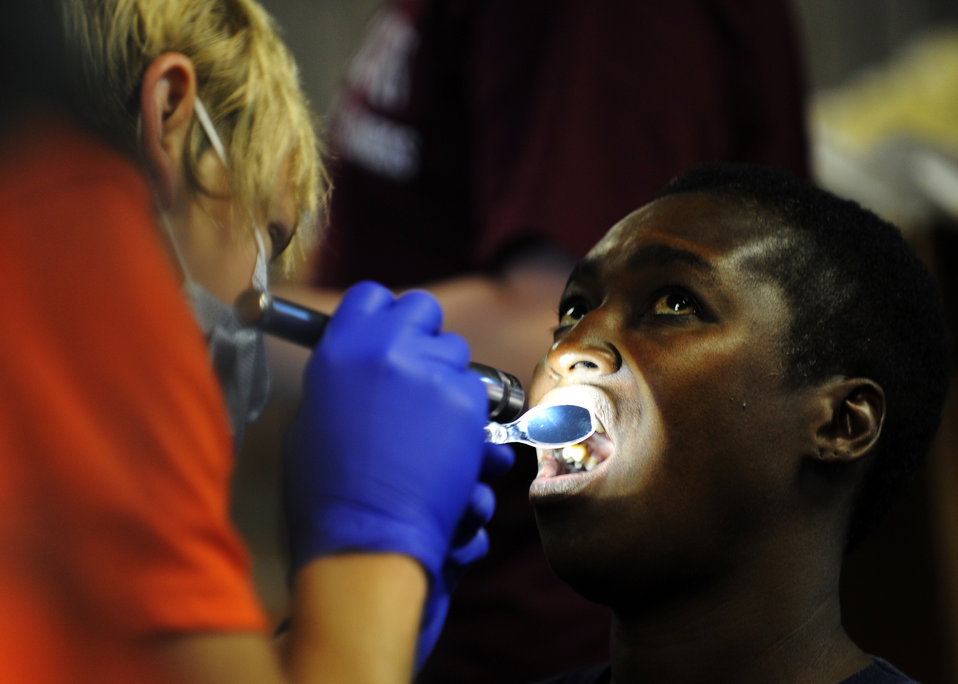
Local 'Stand down' serves homeless veterans

Tyler Williams performs a dental checkup for a homeless woman at the 11th annual Stand Down Against Homelessness Oct. 29, 2010, at North Charleston Armory Park, S.C. Mr. Williams is a Veterans Affairs dentist who volunteered for this event.